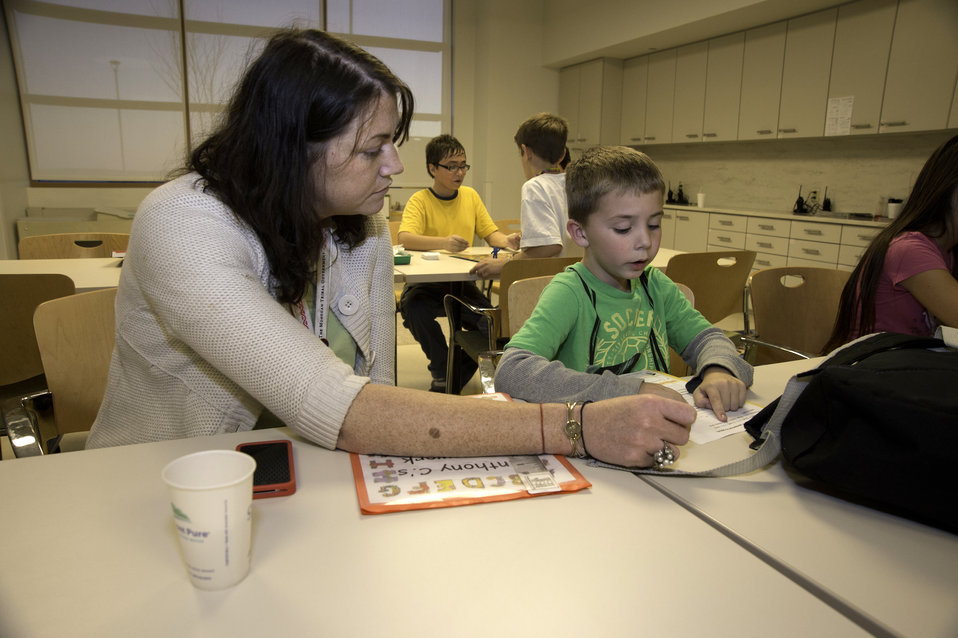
Mohegan youth enrolled in after-school program work on their schoolwork and receive extra help at the Mohegan Tribe Community Center and Government Building in Uncasville, CT on Nov. 18, 2013. A U.S. Department of Agriculture (USDA) Rural Development (RD) Community Facility Loan was provided to the Mohegan Tribe for the construction of the Mohegan Tribe Community Center and Government Building in Uncasville, CT. USDA’s RD Community Facilities Programs makes and guarantees loans to develop essential community facilities in rural areas and towns of up to 20,000 in population. Loans and guarantees are available to public entities such as municipalities, counties, parishes, boroughs, and special-purpose districts, as well as to non-profit corporations and tribal governments. The 160,000 square foot building Center hosts an exhibit celebrating federal recognition, history of Mohegan Chiefs, a new Library and Archives space, new Arts and Crafts room, a new gymnasium, and a new community room to enjoy food and family. The Center will continue the Tribe’s plan for growth and meeting the needs of its members.